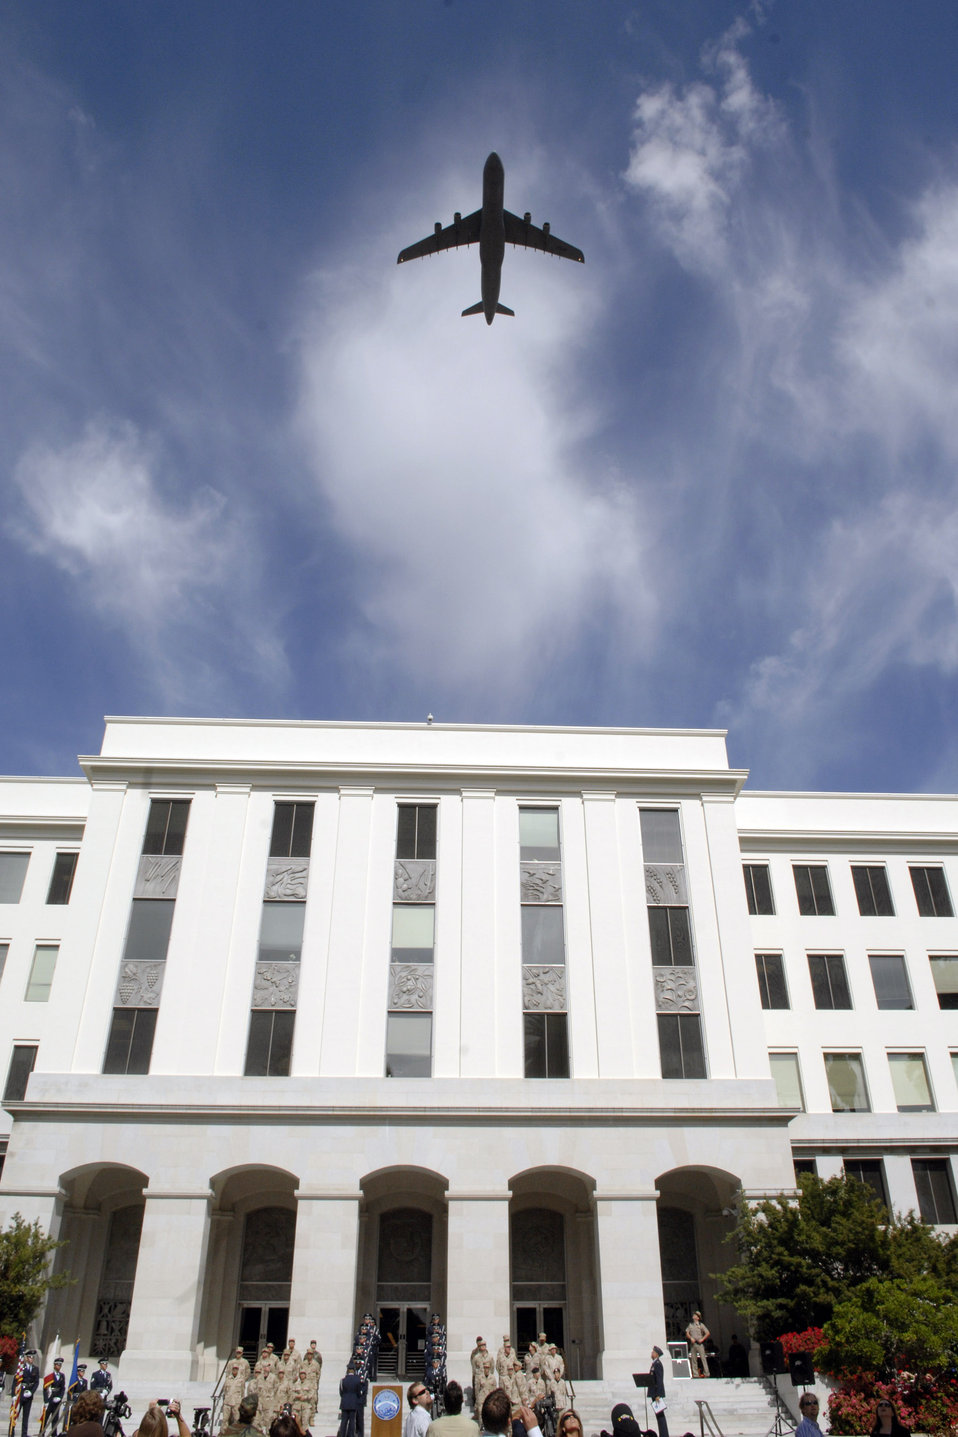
Air Force Week begins in Sacramento

A C-5 Galaxy performs a fly-over above the California State Capitol during the Air Force Week California Proclamation Ceremony June 4 at Sacramento, Calif. The purpose of Air Force Week is to inform and educate the American public about the importance and roles of the Air Force in America's national defense. The C-5 is from Travis Air Force Base, Calif.